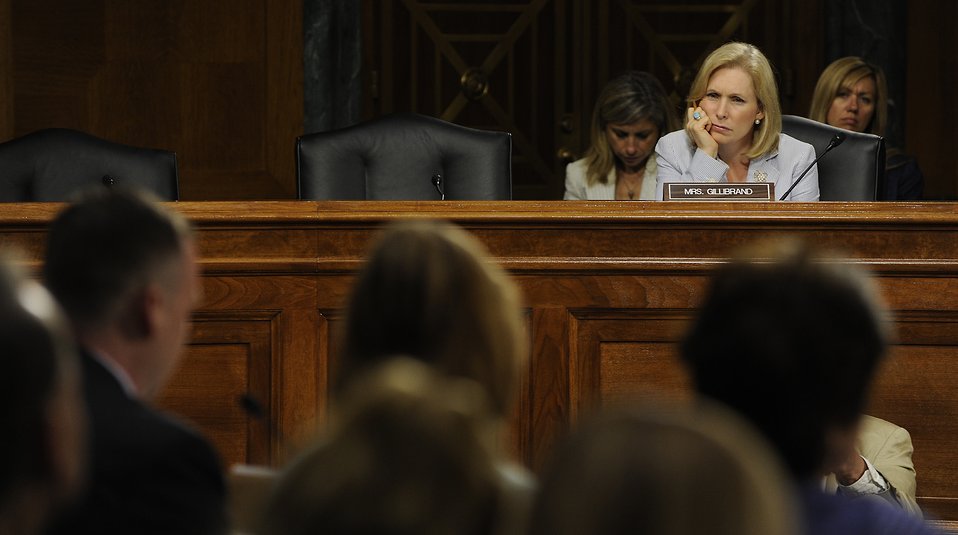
Air Force spouse testifies on military families with special needs

Sen. Kirsten Gillibrand listens to testimony from Jeremy Hilton during a U.S. Senate Armed Services Subcommittee on Personnel hearing in Washington, D.C., June 21, 2012. Hilton, who is married to Lt. Col. Renae Hilton, is an advocate for military families with special needs and is the Military Spouse of the Year for 2012.